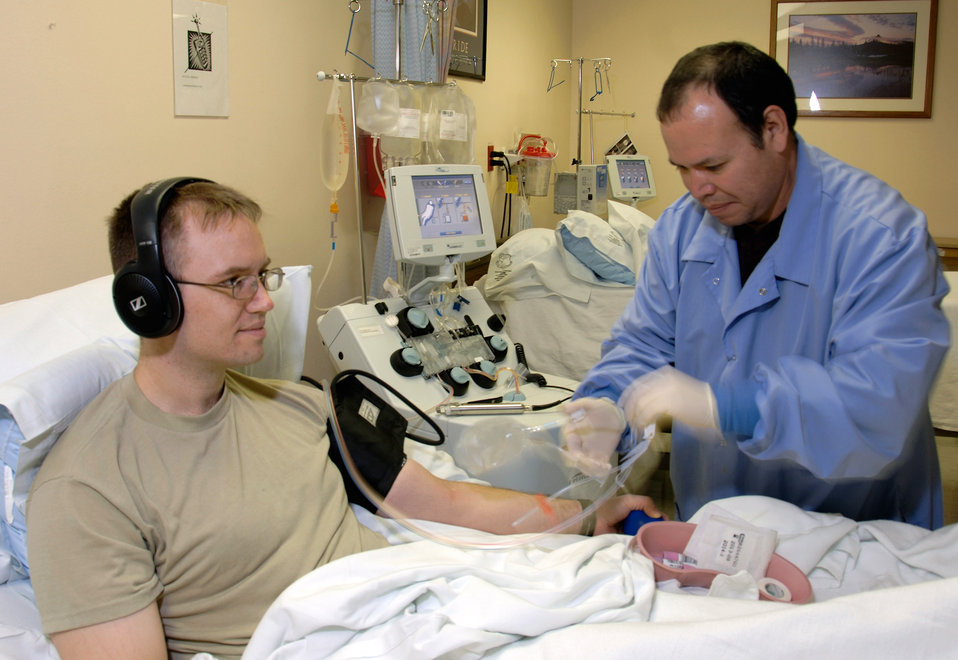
Lackland medical center labs receive 2-year accreditation

Andres Barrerea prepares Army Capt. (Dr.) Sam Grindstaff to donate platelets at the cellular therapy/apheresis clinic Nov. 26 at San Antonio Military Medical Center-South. The department was one of the areas inspected during a recent AABB visit. Platelet donations, like blood, are always needed, especially during the holiday season. Captain Grindstaff is a first-time donor and a pathology resident from San Antonio Military Medical Center-North, formerly known as the Brooke Army Medical Center. Mr. Barrerea is a medical lab technician with the 59th Laboratory Squadron.